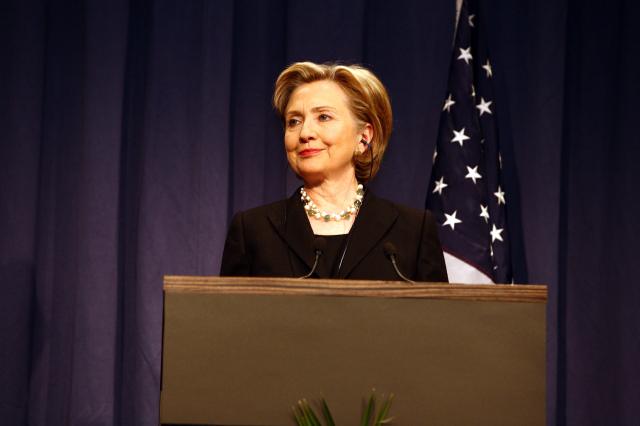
Press Conference With Russian Foreign Minister

Press conference after dinner meeting between U.S. Secretary of State Hillary Rodham Clinton and Russian Foreign Minister Sergey Lavrov in Geneva, Switzerland March 6, 2009.